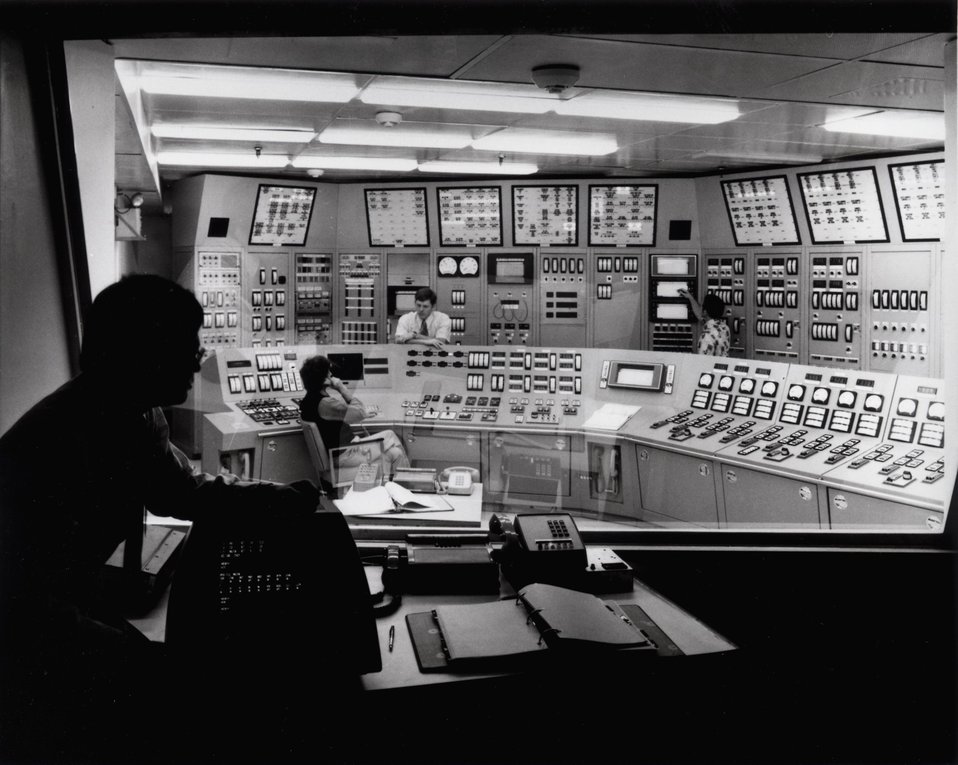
A view of the Operator Training Simulator from an adjacent room, where one-way glass permits observation by instructors. Circa 1977.